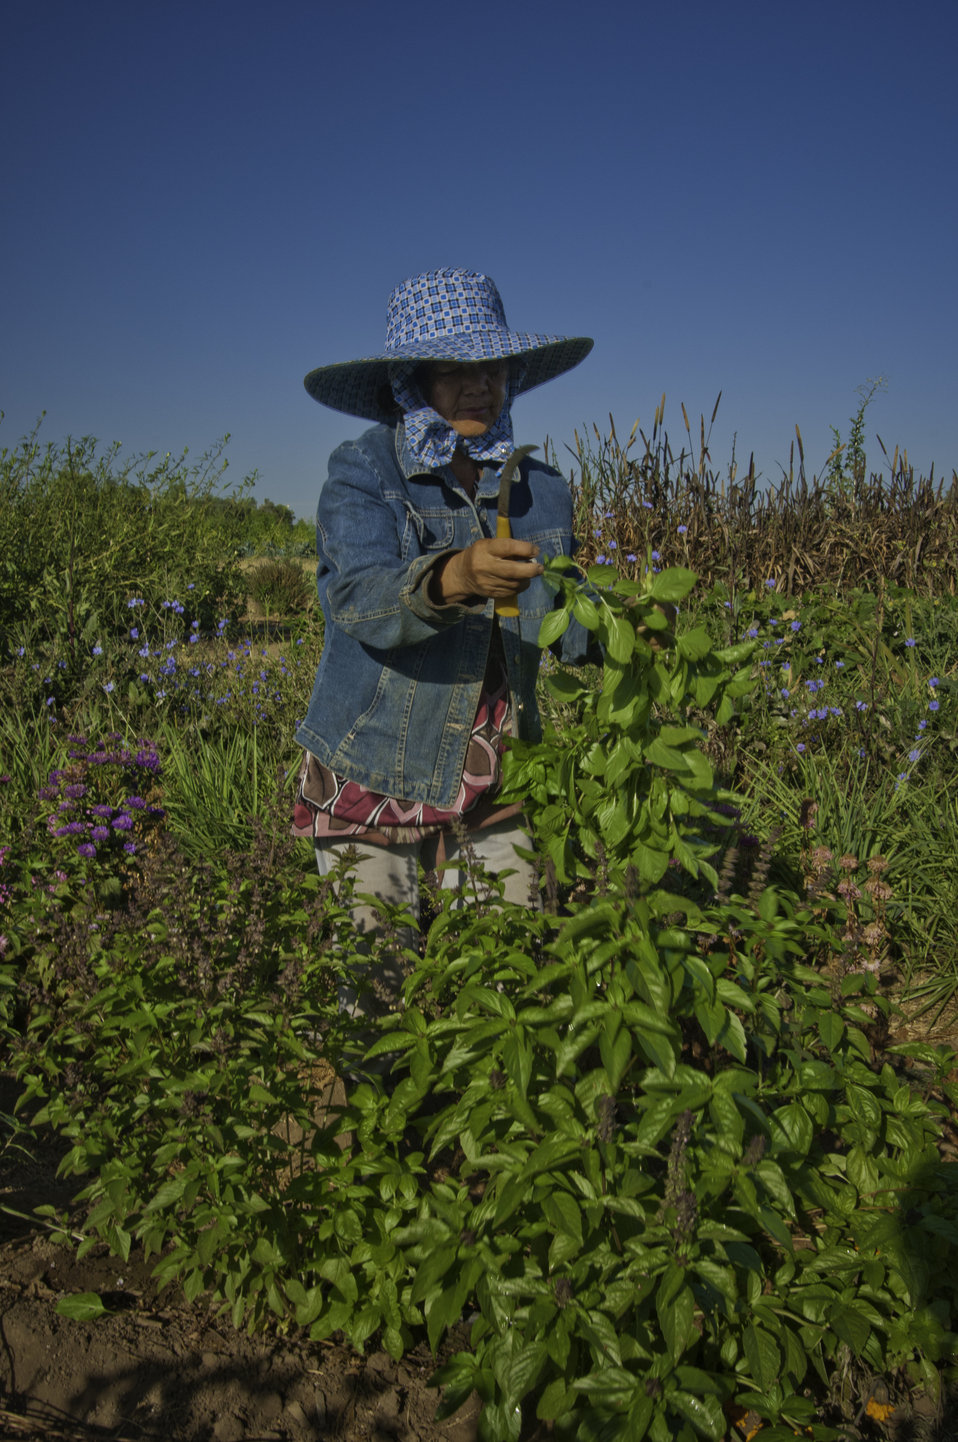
May Young Vu a Hmong farmer harvesting basil on her farm May's Flower's in Sanger, California on Thursday, August 29, 2013.